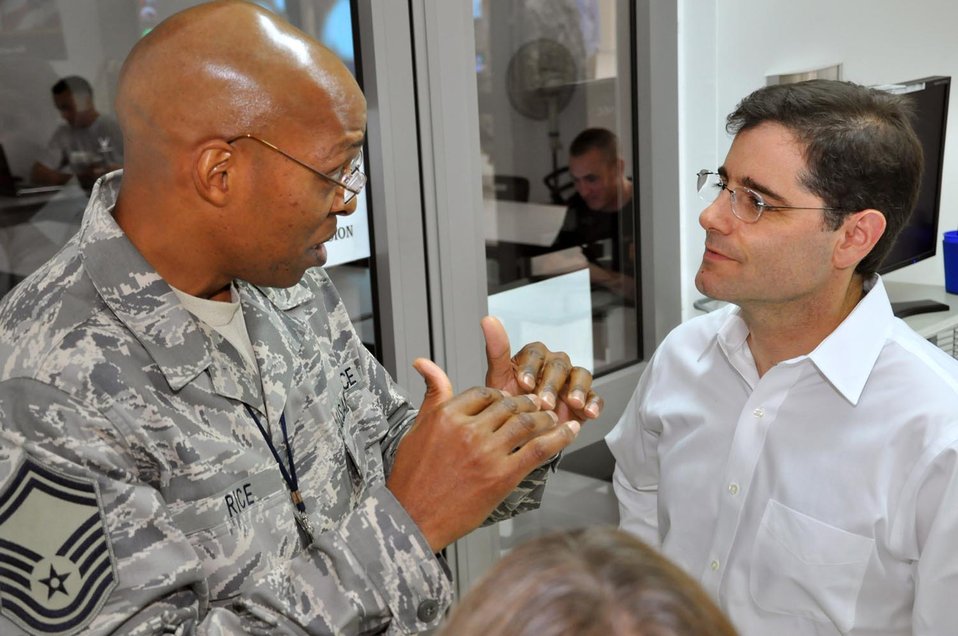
Chairman Genachowski visits with U.S. soldiers